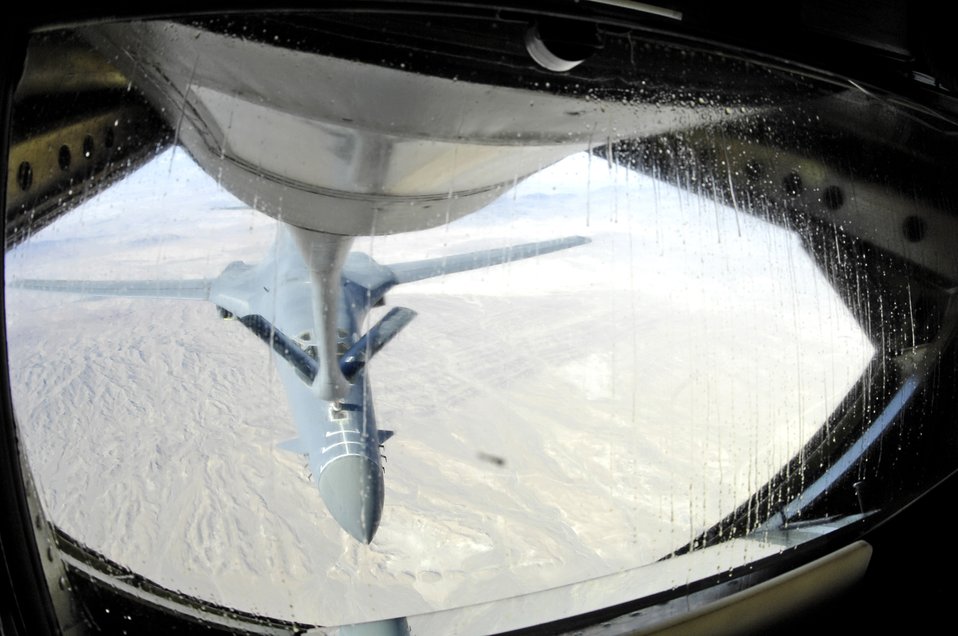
Fill'er up please!

0A B-1B Lancer from the 9th Expeditionary Bomb Squadron flies up to the boom of a KC-135 Stratotanker from the 22nd Expeditionary Air Refueling Squadron at Manas Air Base, Kyrgyzstan, and deployed from the 92nd Air Refueling Wing, Fairchild Air Force Base, Wash., over Afghanistan. The 22nd EARS refuels aircraft in and around Afghanistan.